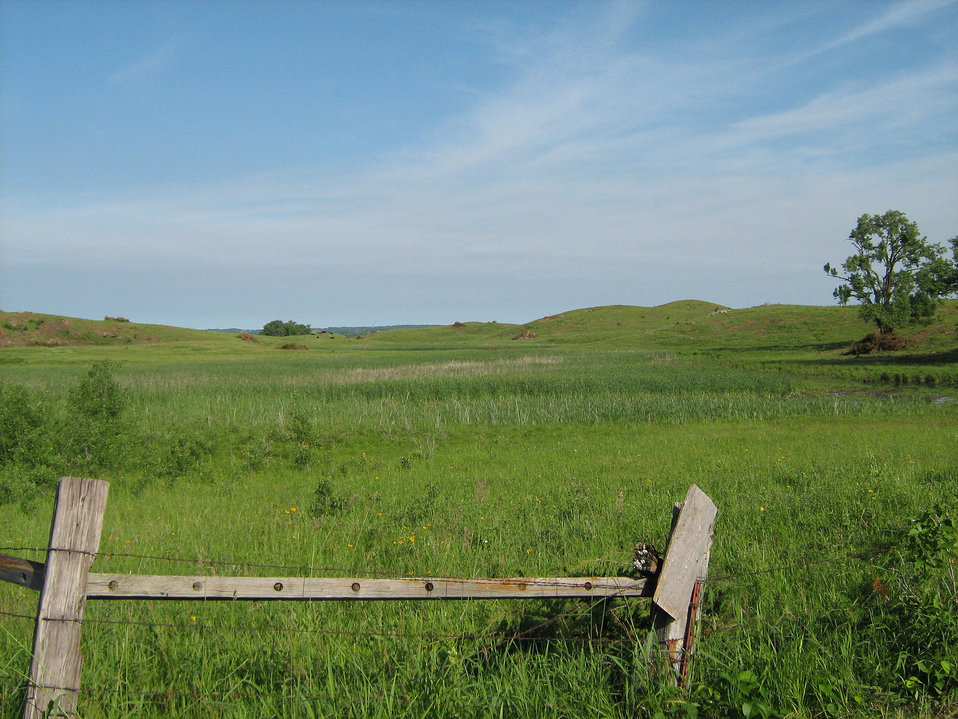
Rested pasture before tree removal in 2011.